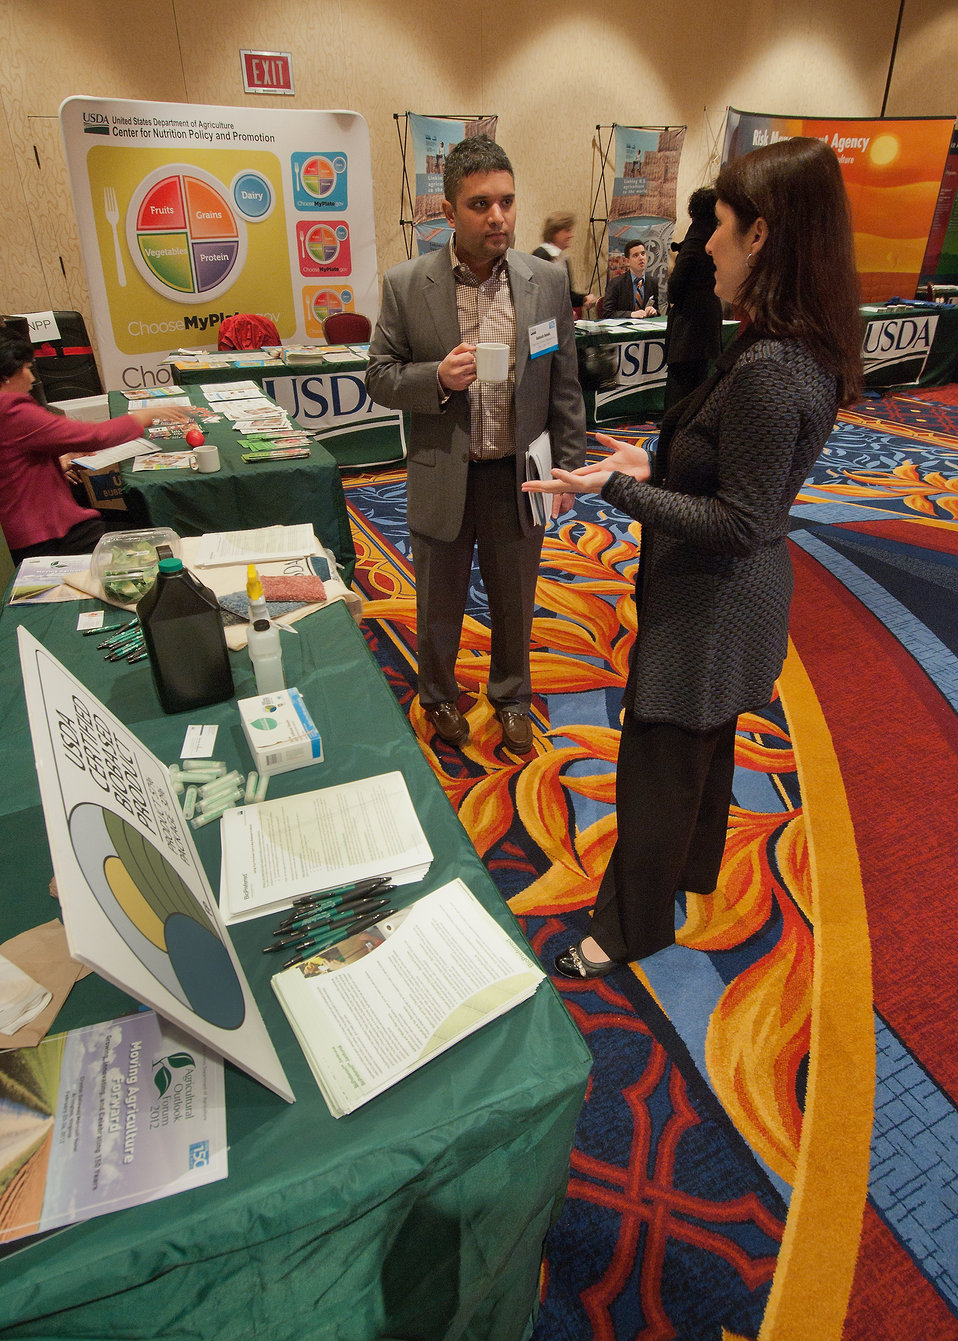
Aakash Doshi (left), CitiGroup Global Markets, Inc., New York, New York asks Marie Wheat (right) about the United States Department of Agriculture Biopreferred exhibit at the 2012 Agricultural Outlook Forum, “Moving Agriculture Forward, Growing, Innovating and Celebrating 150 Years” held at the Crystal gateway Marriott Hotel Arlington, Virginia, Friday, February 24, 2012. This year's forum coincides with the 150th anniversary of the Department of Agriculture addressing economics, marketing, research, food safety, nutrition, conservation, rural development, alternative energy, trade and many other agricultural issues.